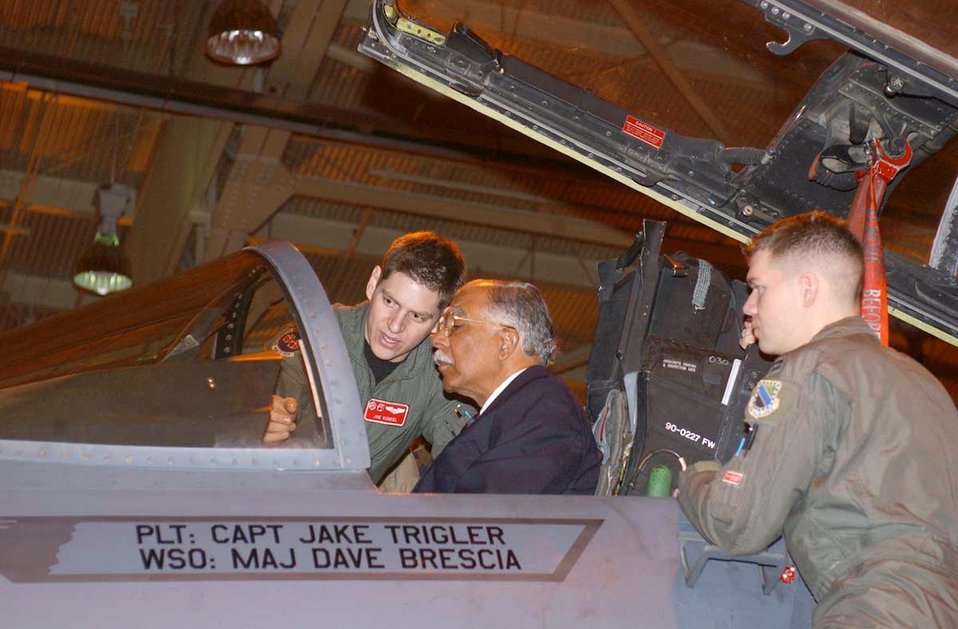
Aviation pioneer says 'know your stuff'

ELMENDORF AIR FORCE BASE, Alaska (AFPN) -- Capt. Joe Kunkel (left) explains F-15E Strike Eagle instrument gauges to retired Lt. Gen. William E. Brown Jr., while Capt. Ahren Heidt looks on. Both captains are assigned to the 90th Fighter Squadron at Elmendorf Air Force Base, Alaska. Brown toured the squadron before giving the keynote speech at the base's Black History Month kick-off luncheon.